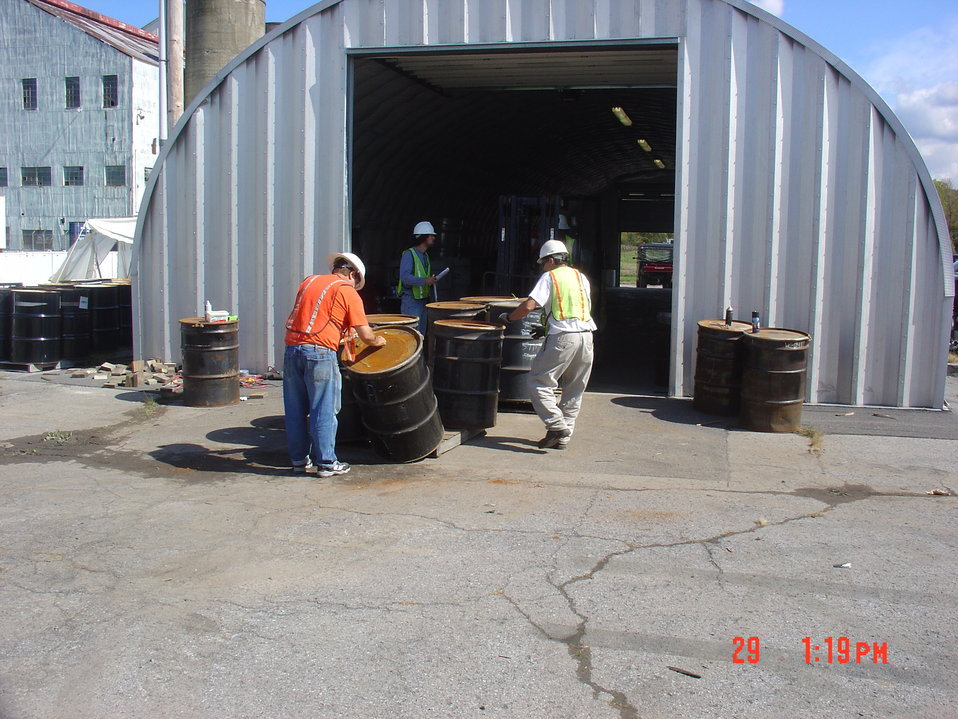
DRUMS

Activities from the Niagara Falls Storage Site, which is associated with the former Lake Ontario Ordnance Works. Formerly Utilized Sites Remedial Action Program (FUSRAP), a program initiated in 1974 to identify, investigate and clean up or control sites that were part of the Nation's early atomic energy and weapons program. Activities at the sites that are eligible for FUSRAP were conducted by Manhattan Engineer District (MED) or the Atomic Energy Commission (AEC), both predecessors of the Department of Energy (DOE). The U.S. Army Corps of Engineers was assigned management of FUSRAP by Congress in 1997.